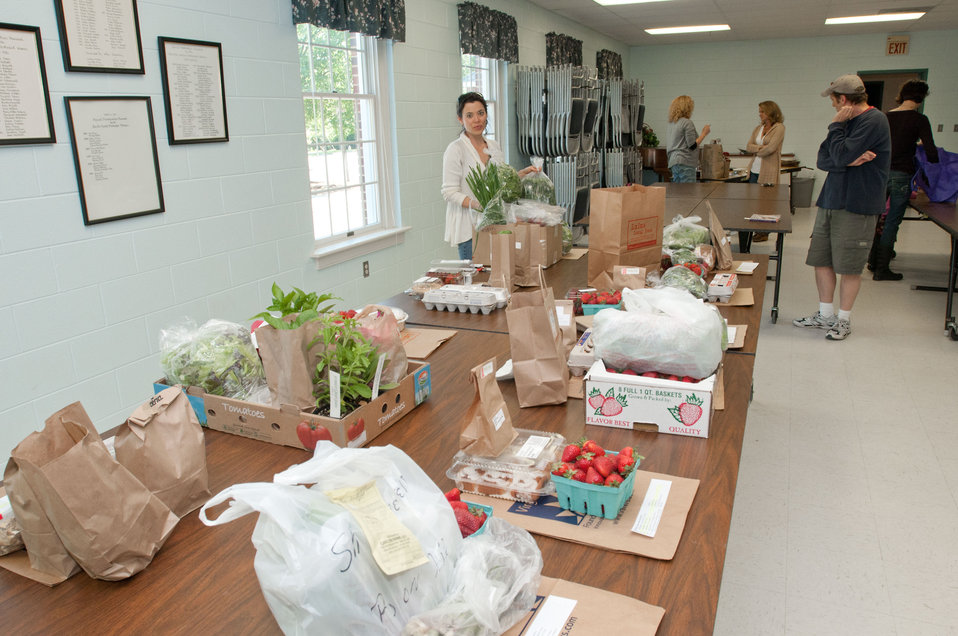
Christy Talbott of Richmond, VA came to the Fall Line Farms pick-up point at Bon Air United Methodist Church on Thursday, May 5, 2011. This is one of several pick-up points in the Richmond, VA area. This local food hub offers a wide variety of household food staples and specialty items. The difference from traditional co-ops is that members can pick their customized orders from an ever changing inventory of fruits, vegetables, meats, soaps, eggs, cheeses, flowers, honey, pastas, sauces, syrups, baked goods, mushrooms, flour and grains. Suppliers post what they have on a Lulus Local Food online listing and customers can make their selection Every Thursday suppliers deliver orders to, one of several pick-up points, designated by the customers in or around the Richmond area.